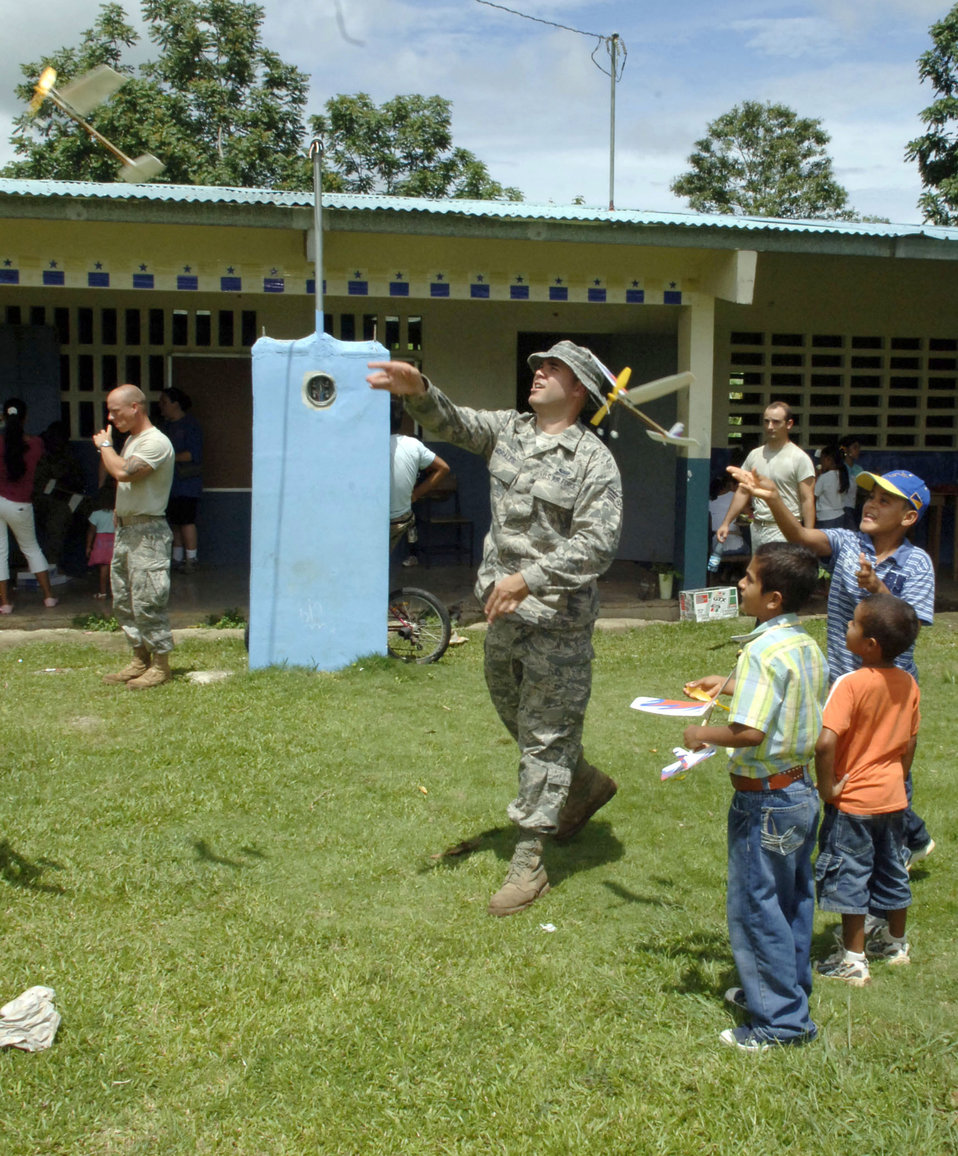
New Horizons Airmen spend day at Panamanian school

Senior Airman Cesar Morales launches rubber-band airplanes with students July 12, 2010, at the Sansonsito School in Panama. Airman Morales is assigned to the 820th Expeditionary RED HORSE Squadron.